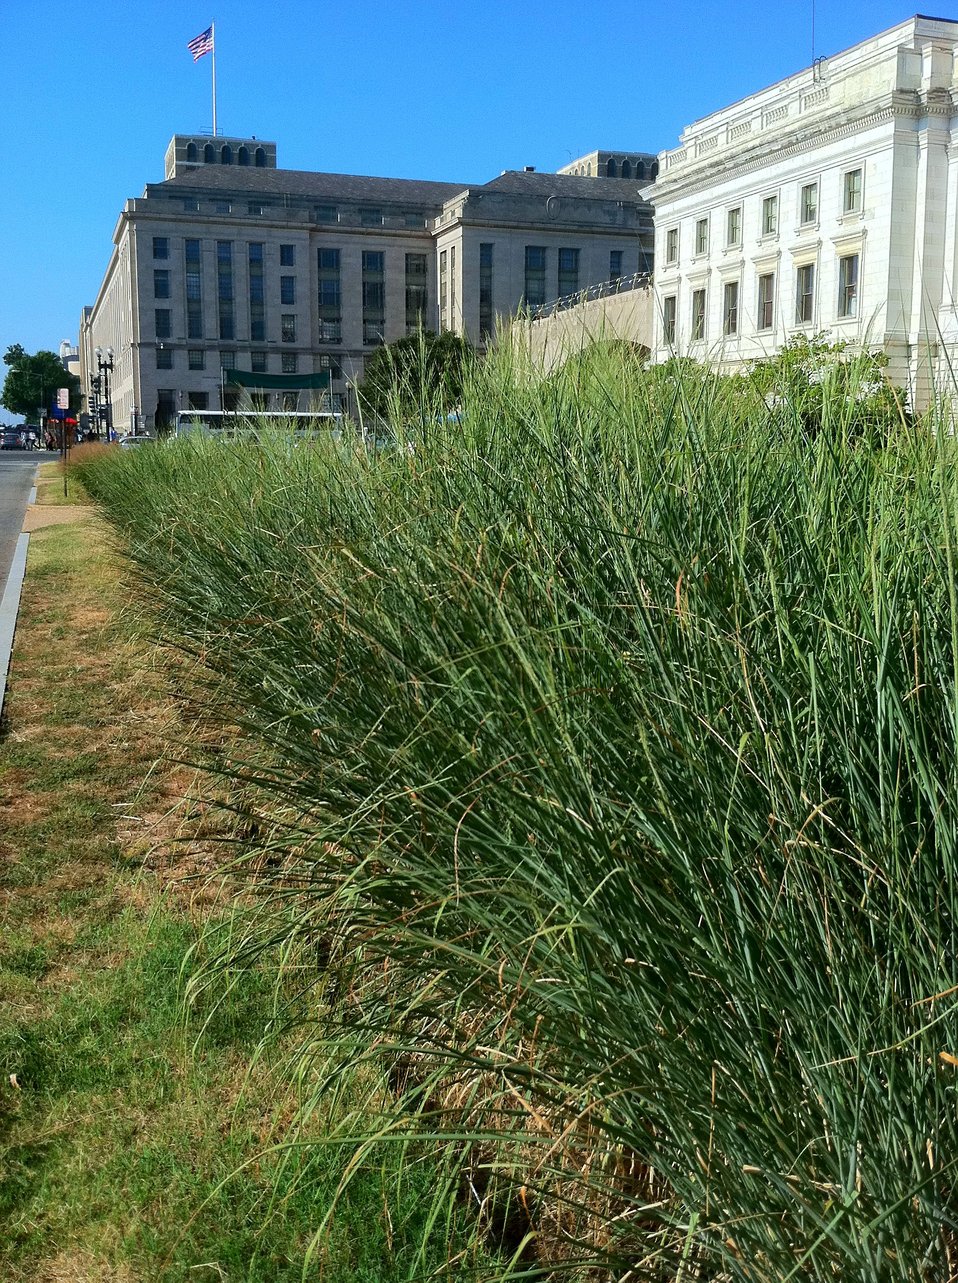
Switchgrass is both a perennial and self-seeding crop and farmers do not have to plant and reseed after annual harvesting. An established switchgrass stand can survive for ten years or longer. Unlike corn, switchgrass can grow on marginal lands and requires relatively modest levels of chemical fertilizers. Overall, it is considered a resource-efficient, low-input crop for producing bioenergy from farmland. This photograph shows switchgrass growing in the People’s Garden at the U.S. Department of Agriculture (USDA), in Washington, DC, on Tuesday, Aug. 2, 2011.